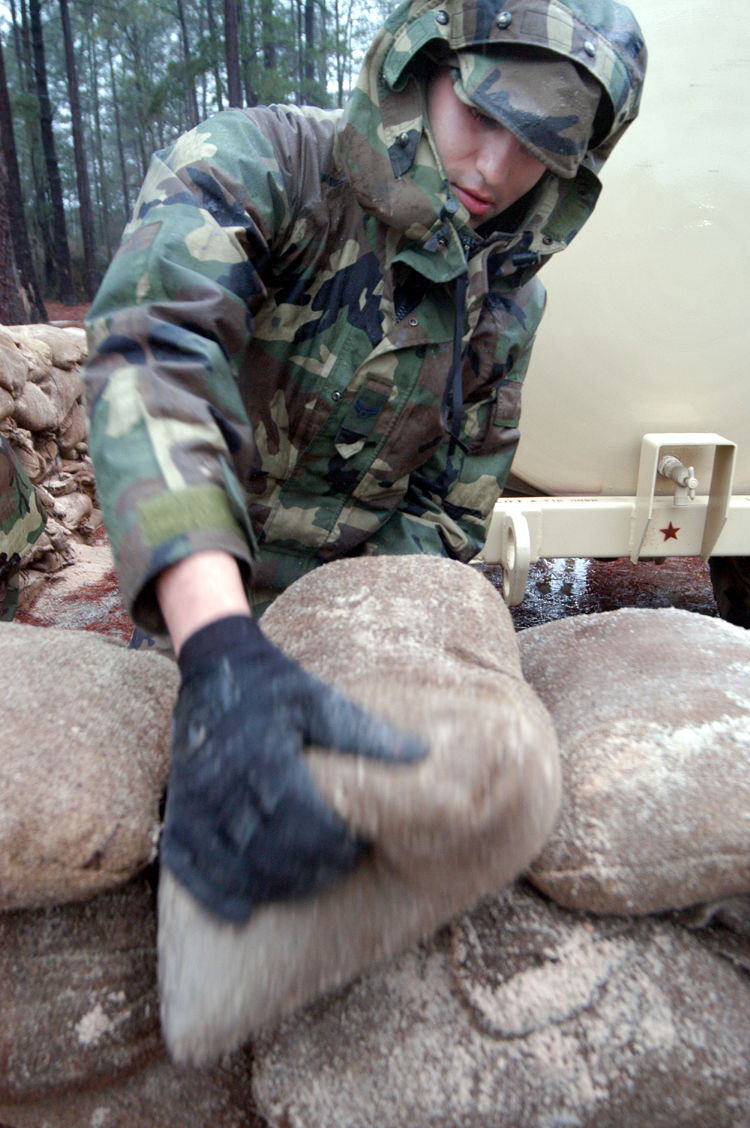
Practice makes perfect

ROBINS AIR FORCE BASE, Ga. -- Airman 1st Class Leonardo Rodriguez stacks sandbags around a water source during a training exercise here recently. The exercise measures the overall effectiveness of servicemembers to perform technical and survival skills in combat environments.